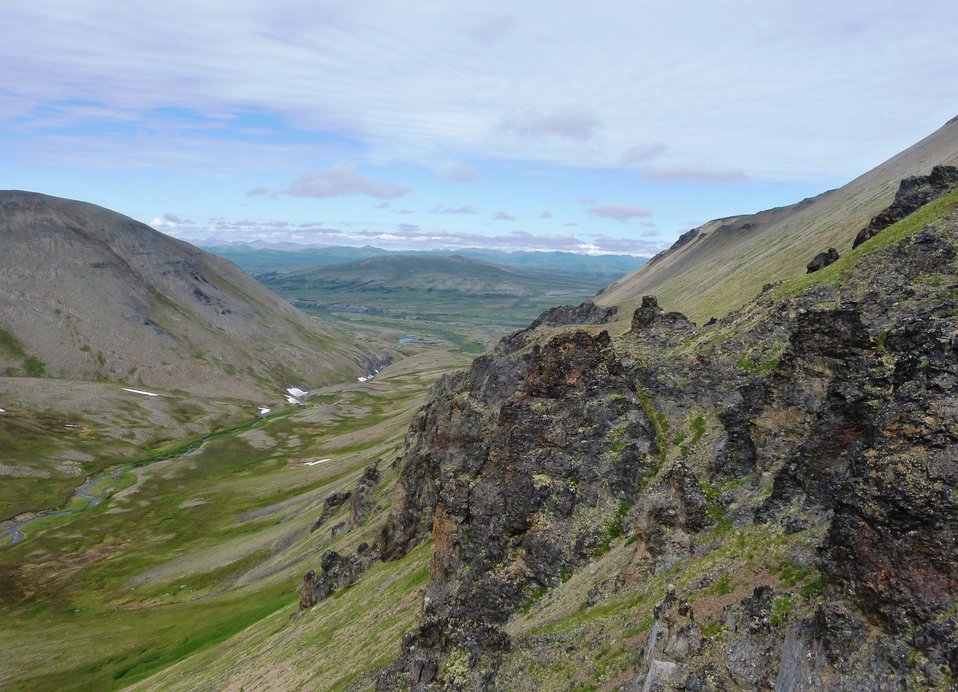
Kilbuck Mountains, Yukon Delta National Wildlife Refuge

Photo by: Kristine Sowl,
USFWS, Yukon Delta NWR, July 10, 2013